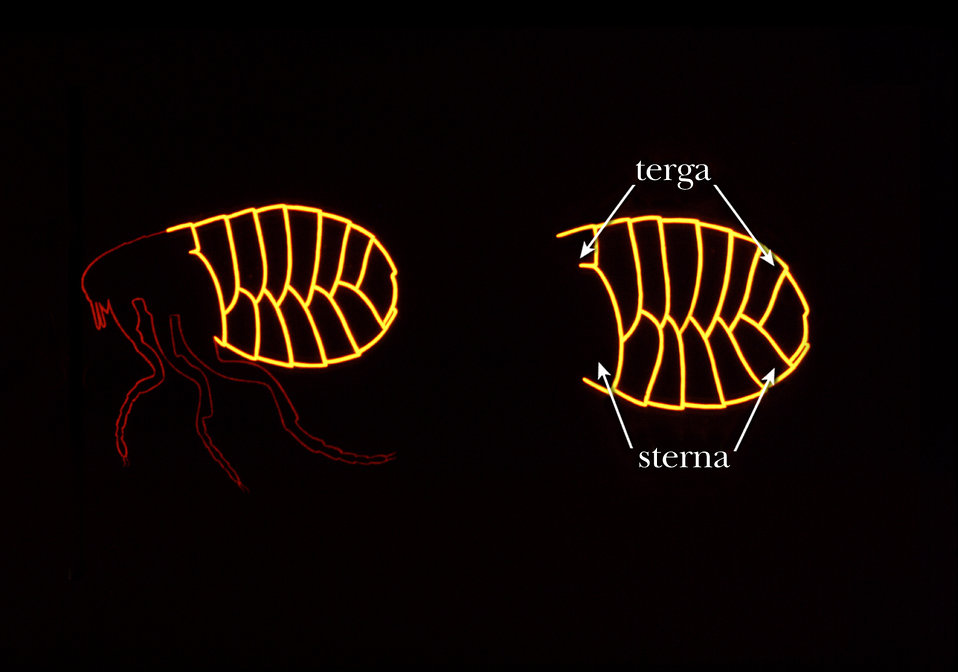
This illustration shows some of the identifying morphologic exoskeletal characteristics found on the abdomen of a flea.